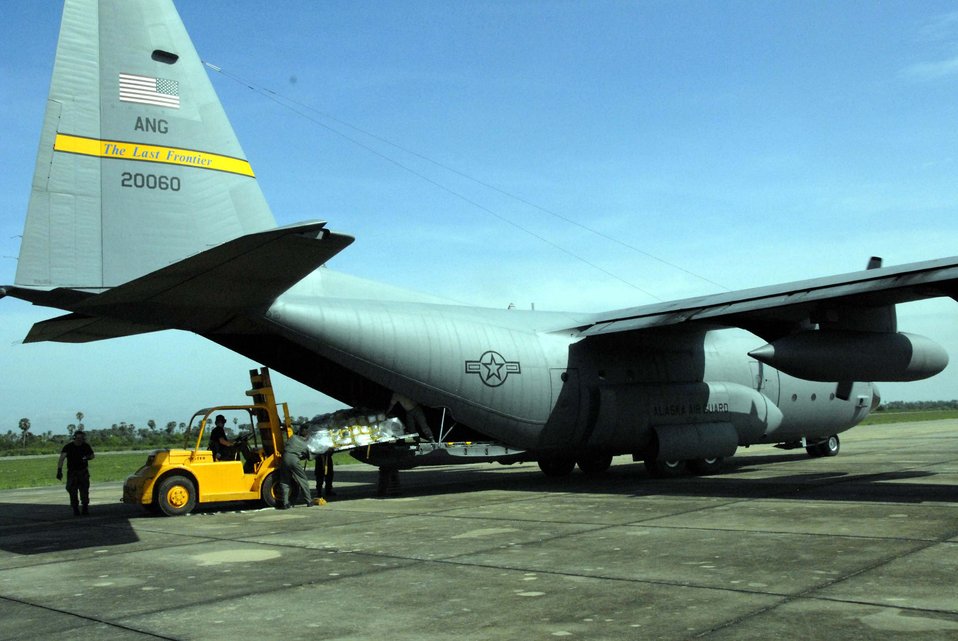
Cambodian relief

A forklift offloads 3,000 pounds of medical supplies from a C-130 Hercules May 24 after landing at Kampong Chhnang Province Airfield, Cambodia. An awaiting multinational team of medical professionals broke down the supplies and moved them to clinics in Kampong Chhnang and Kampong Cham provinces in support of Operation Pacific Angel, a joint/combined humanitarian assistance operation in support of capacity-building efforts. Participating services include the active duty, Reserve and National Guard components of the Air Force, Army, Royal Thai air force, and Royal Cambodian armed forces. The C-130 is from the 144th Airlift Squadron from Kulis Air National Guard Base, Alaska.